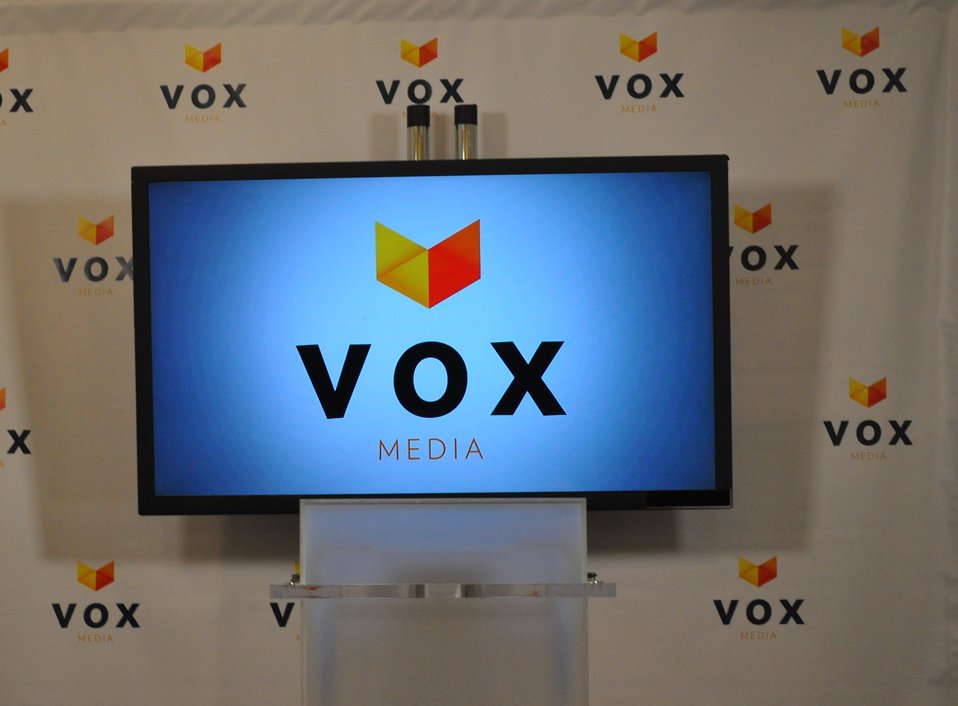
Broadband Challenges and Opportunities, at Vox Media - DSC 0676